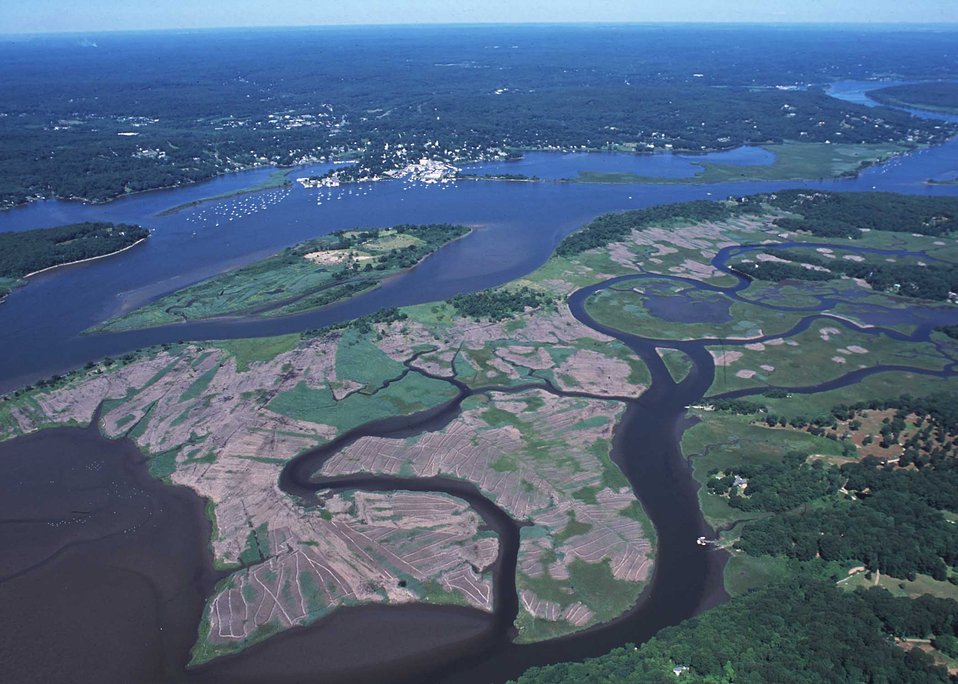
Connecticut River tideland habitat undergoing invasive plant control (light colored areas) and native plant community restoration.